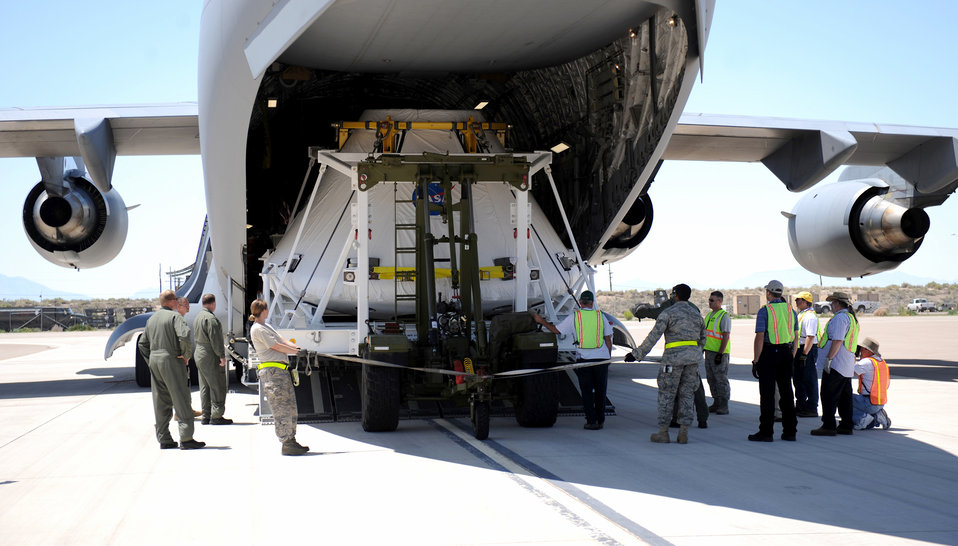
Next-gen spacecraft stops at Holloman

Airmen from the 49th Logistics Readiness Squadron help unload NASA's Pad Abort One Crew Module from a Mississippi Air National Guard C-17 Globemaster III Aug. 19 at Holloman Air Force Base, N.M. The module arrived here from Dryden Flight Research Center, Edwards, Calif. Billed as the shuttle replacement program for NASA, the Orion Program is designed to take the next generation of astronauts to space.